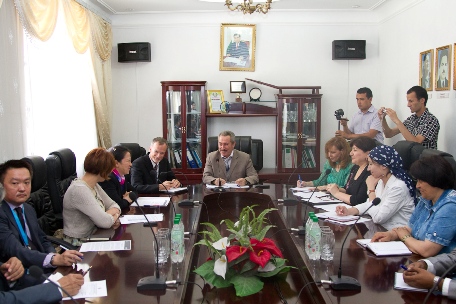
Ambassador Gross, Tajik Deputy Minister Mirzoev, and USAID Coordinator Ogden Participate in a Press Conference

U.S. Ambassador to Tajikistan Ken Gross, Tajik Deputy Minister of Health Azamjon Mirzoev, USAID Global Polio Coordinator Ellyn Ogden, representative of the World Health Organization (WHO) in Tajikistan Pavel Ursu, and representative of UNICEF in Tajikistan Hongwei Gao, participate in a press conference to launch a national polio vaccination campaign aimed at preventing future outbreaks of the disease, in Dushanbe, Tajikistan, on May 23, 2011.